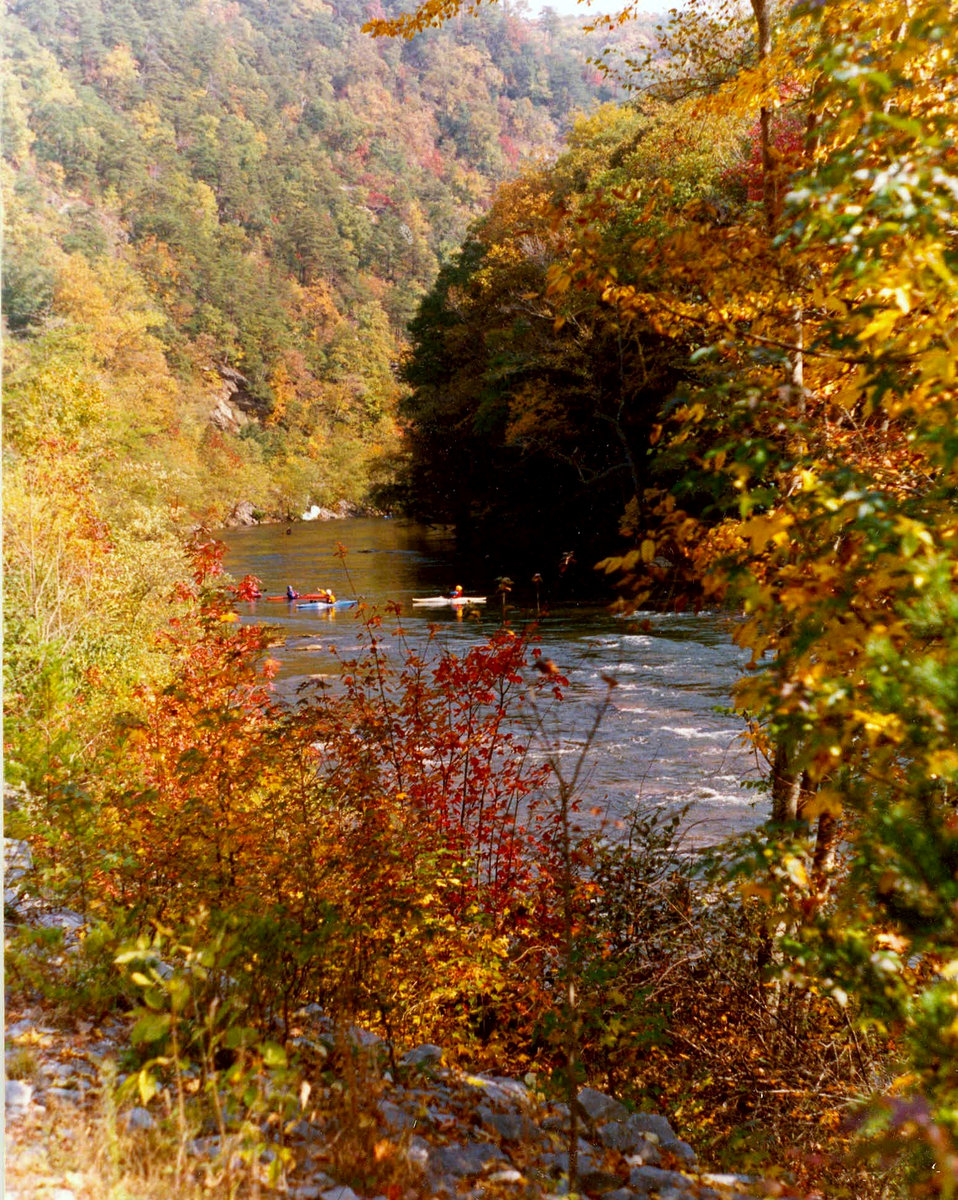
Boaters on a river flowing through Chilhowee National Forest in Price, UT. The U.S. Forest Service (FS) has a Forest Service 2012 Fall Colors Website and a toll-free Fall Colors Hotline at 1-800-354-4595 that will help visitors plan their trip to catch the colors at their peaks.